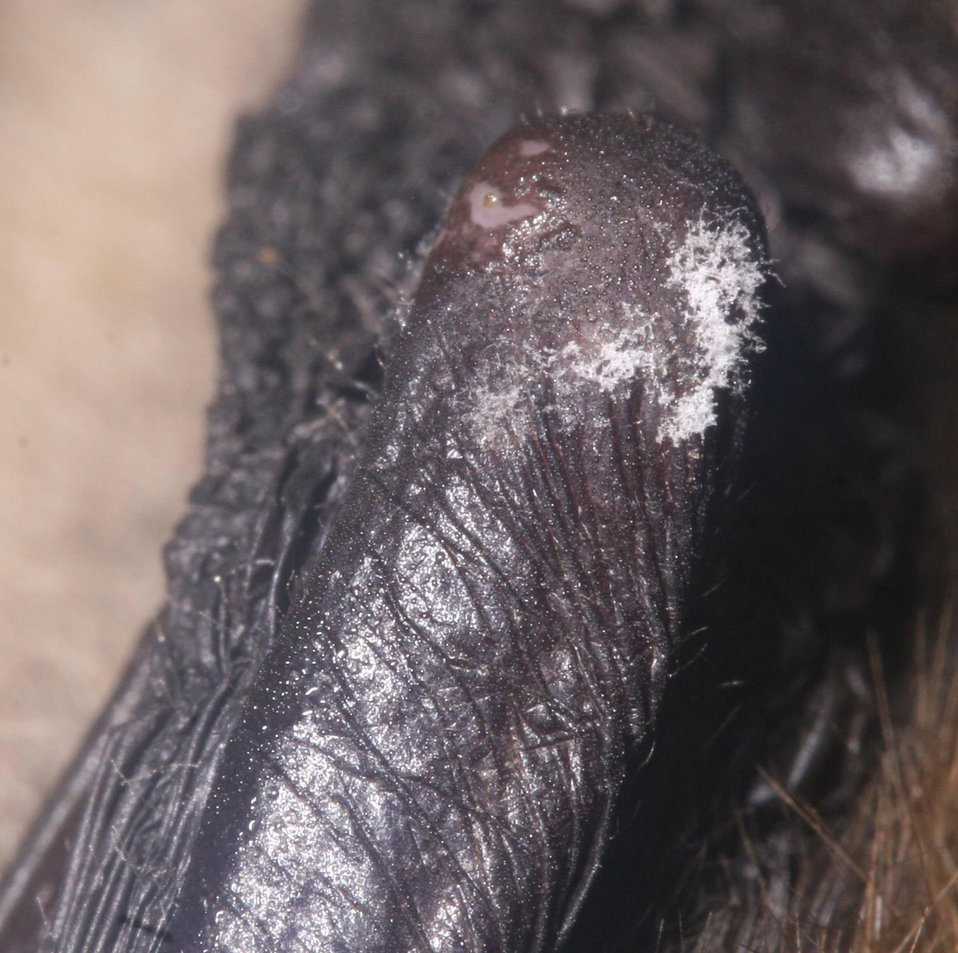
Possible sign of fungal irritation on arm, Barton Cave, Pa.

Caption: Credit: Photo courtesy Greg Turner, Pennsylvania Game Commission

Image size: 1463p (9.753) W x 1455p (9.7) H, 72ppi, 839 KB